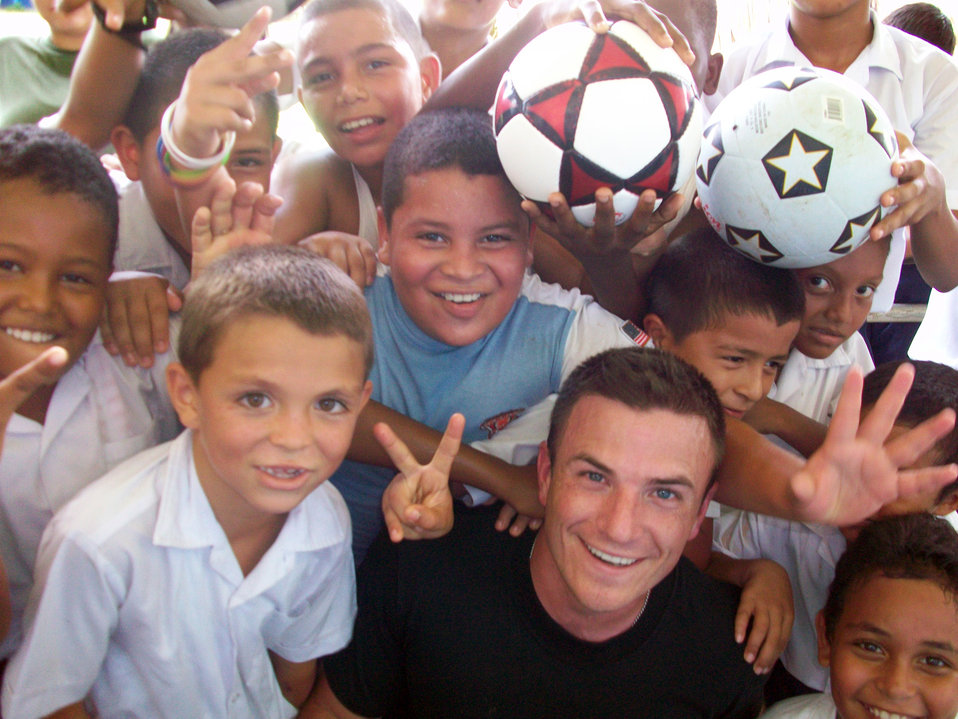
Panamanian children

Capt. Aaron Jackson poses with students from Portuchada School, Aug. 8, 2010, in Panama. Captain Jackson collected more than $4,000 worth of school supplies, toys, sports equipment, clothes and food for Panamanian children while deployed in support of New Horizons Panama 2010.